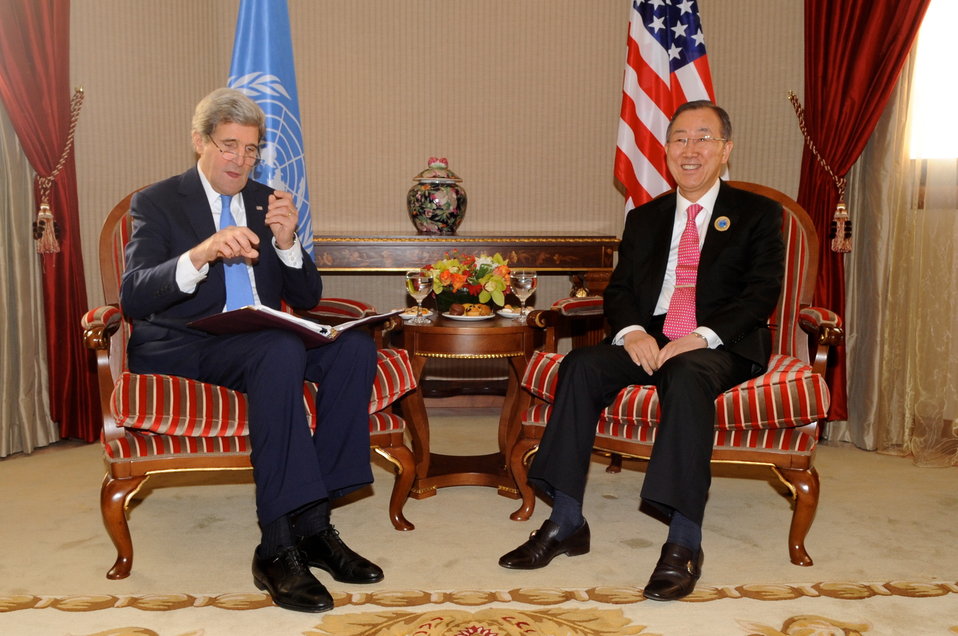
Secretary Kerry Meets With U.N. Secretary-General at Syria Donors' Conference

U.S. Secretary of State John Kerry settled in for a meeting with United Nations Secretary-General Ban Ki-moon for a private discussion before the Syria Donors' Conference convened in Kuwait City, Kuwait, on January 15, 2014.